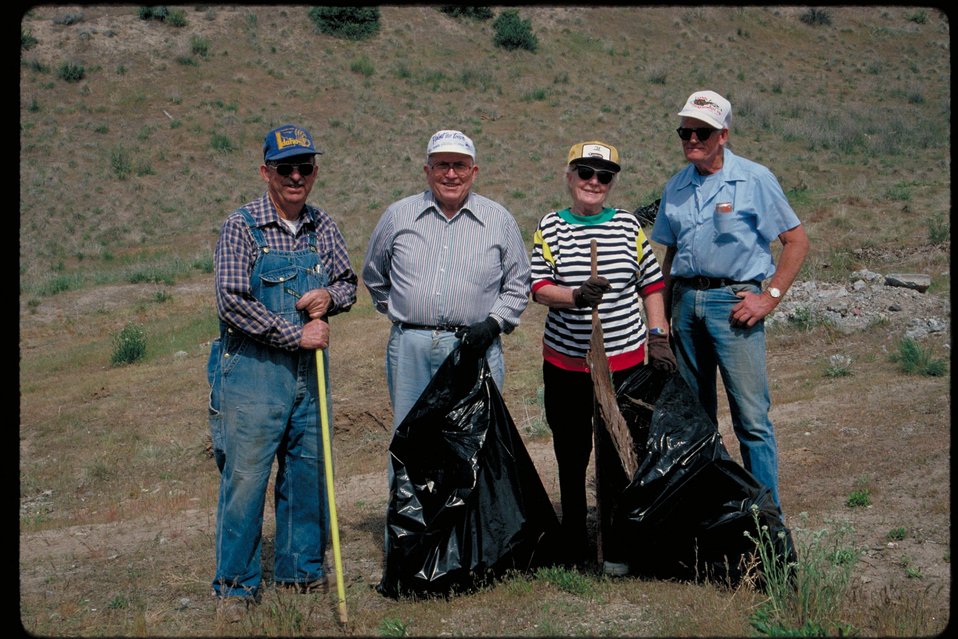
Volunteer cleanup crew Boise Front Four Rivers Field Office LSRD Lower Snake River District